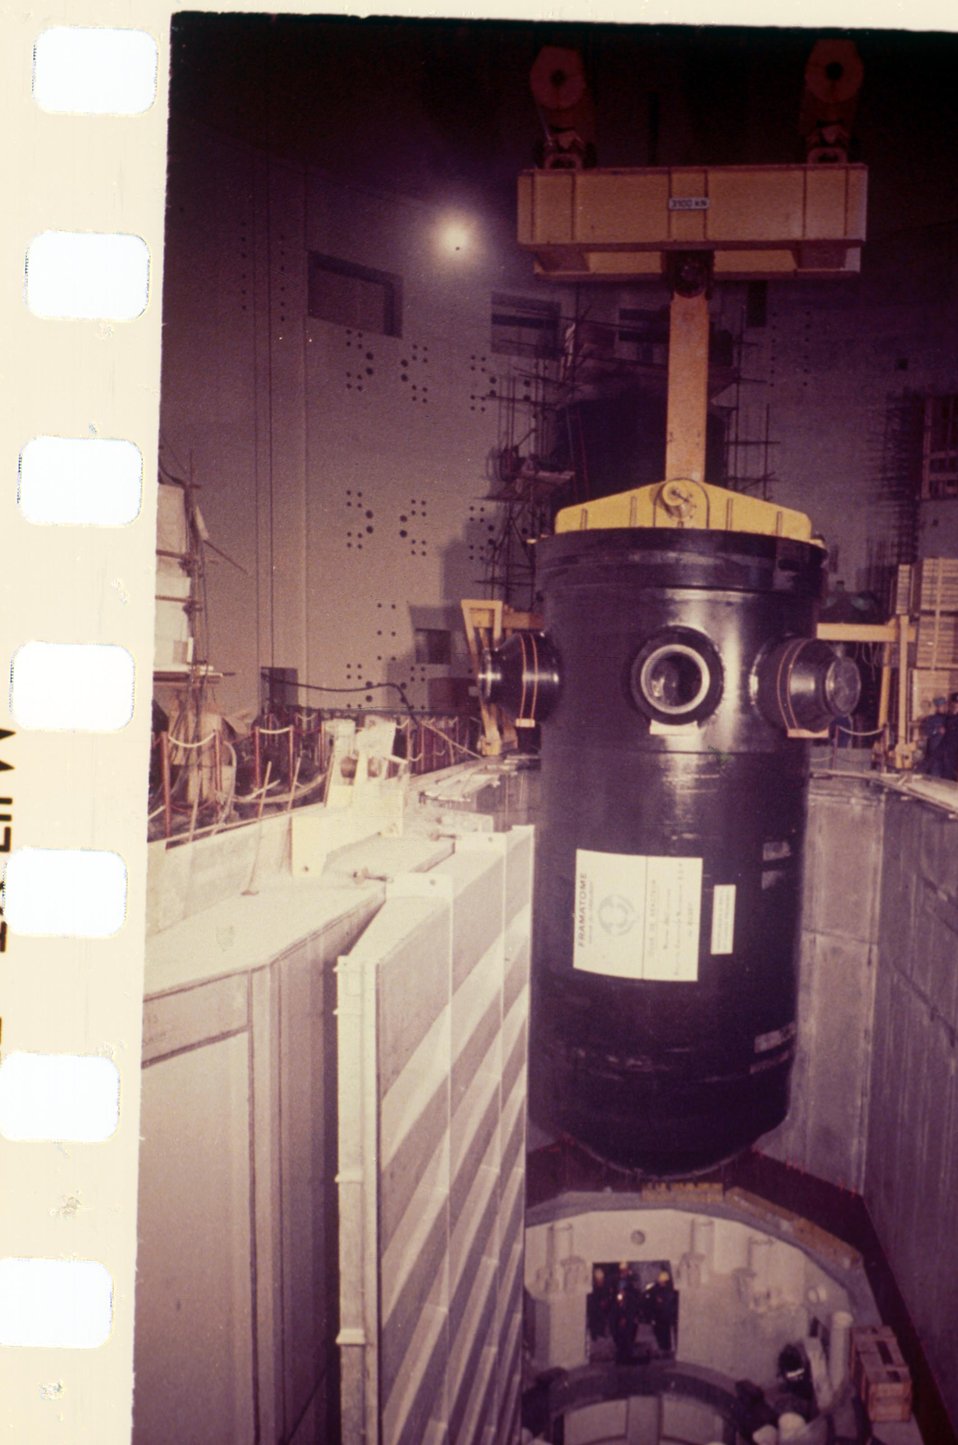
Mise en place de la cuve d'un rÐacteur P.W.R.